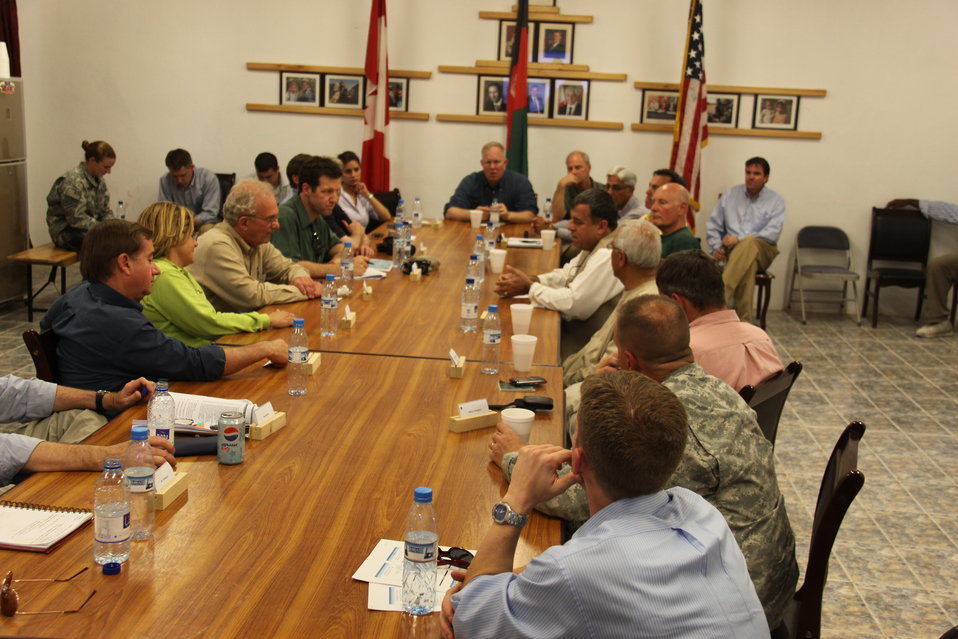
Meeting with Local Leaders in Kandahar